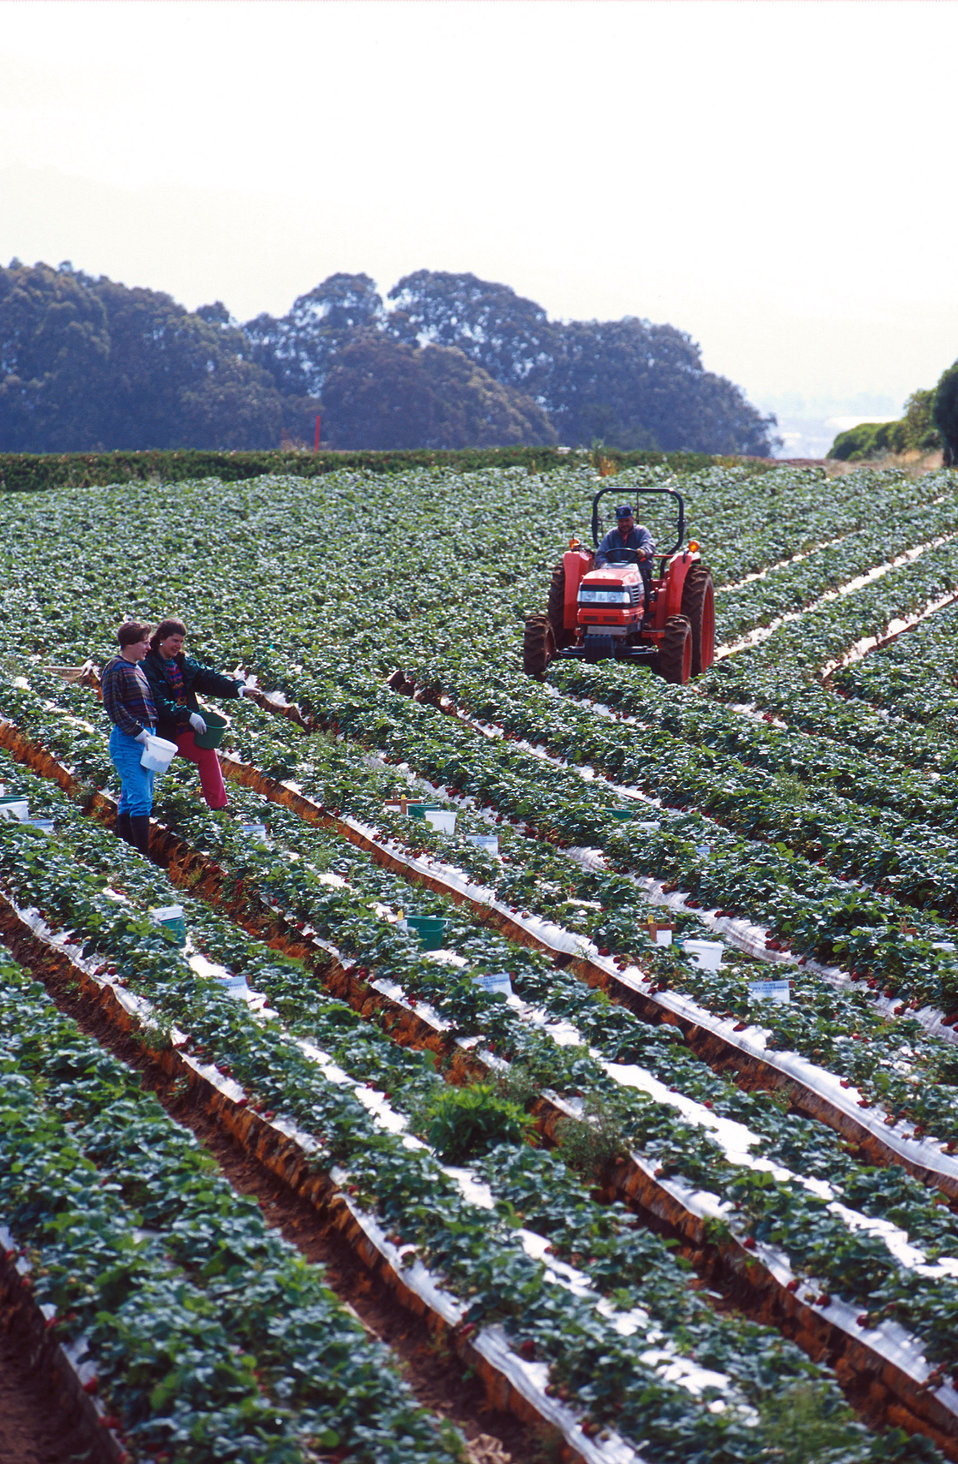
Ranchers in California set aside portions of their farms for collaborative studies on methyl bromide alternatives for strawberries. Adria Bordas and Carolee Bull evaluate biologically based methods for weed and disease control at Rod Koda's ranch.